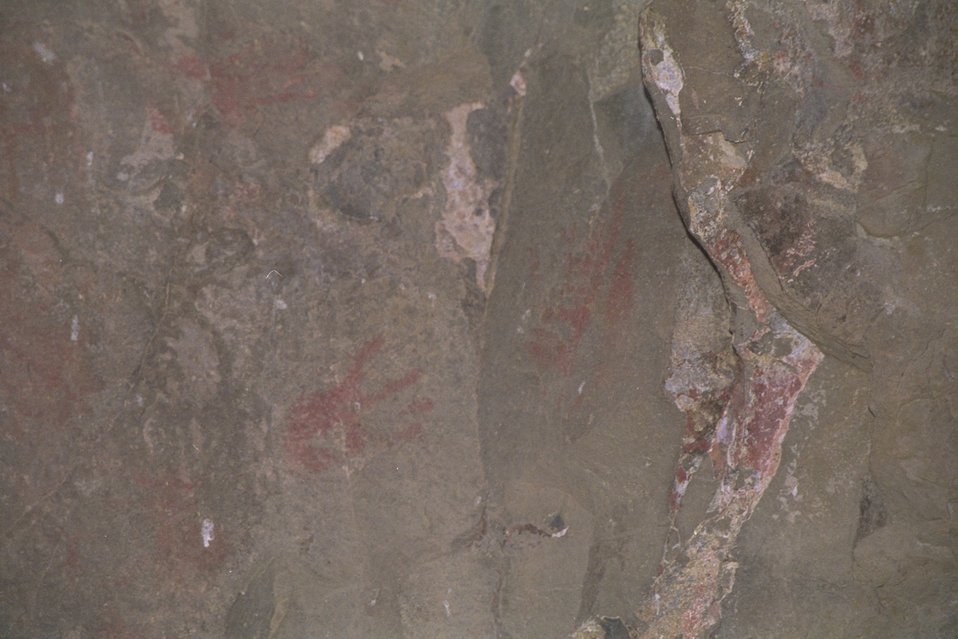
Rock paintings near the takeout at the end of section 2 in the John Day River.